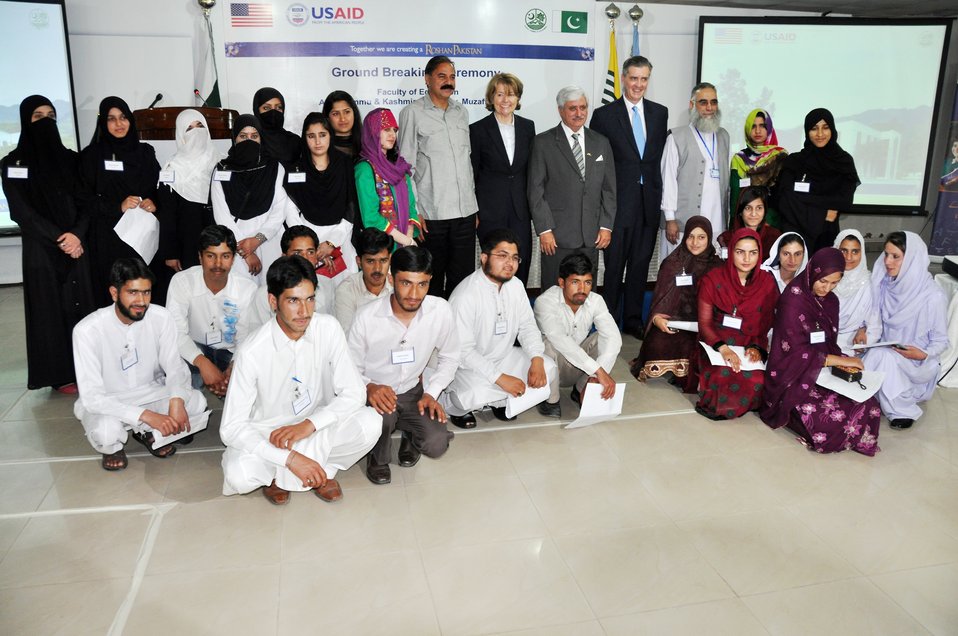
The United States Ambassador to Pakistan, Richard Olson broke ground for a U.S. funded construction of a new Faculty of Education building in Muzaffarabad, AJK. 15